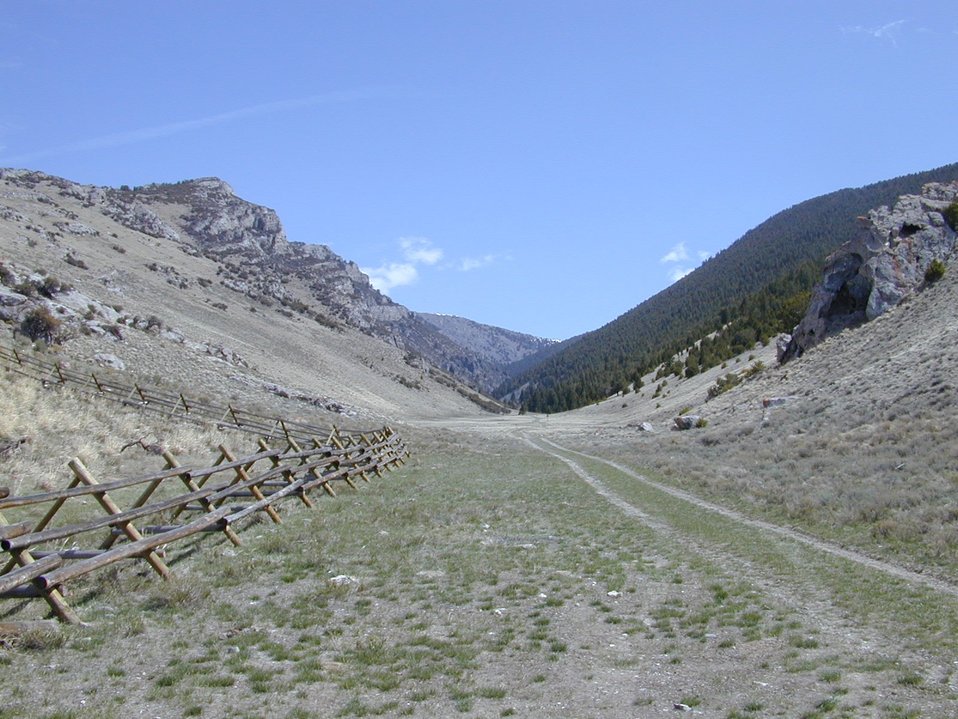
Birch Creek Valley